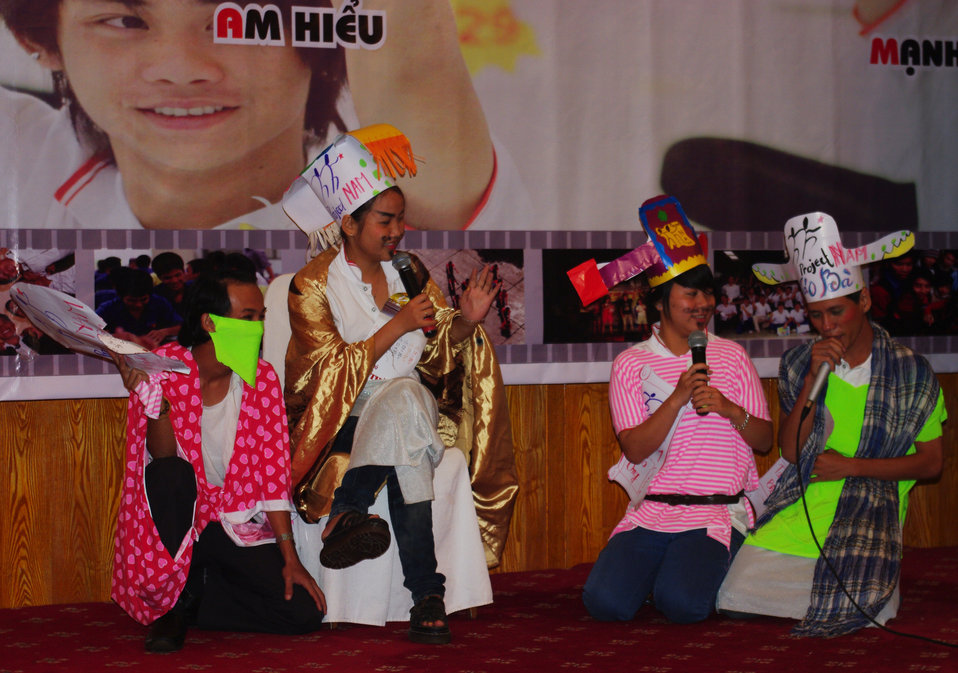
USAID Supports HIV Awareness among Street Youth and Young Men

Trainers and peer educators tell their stories on November 29, 2011, in Hanoi, Vietnam